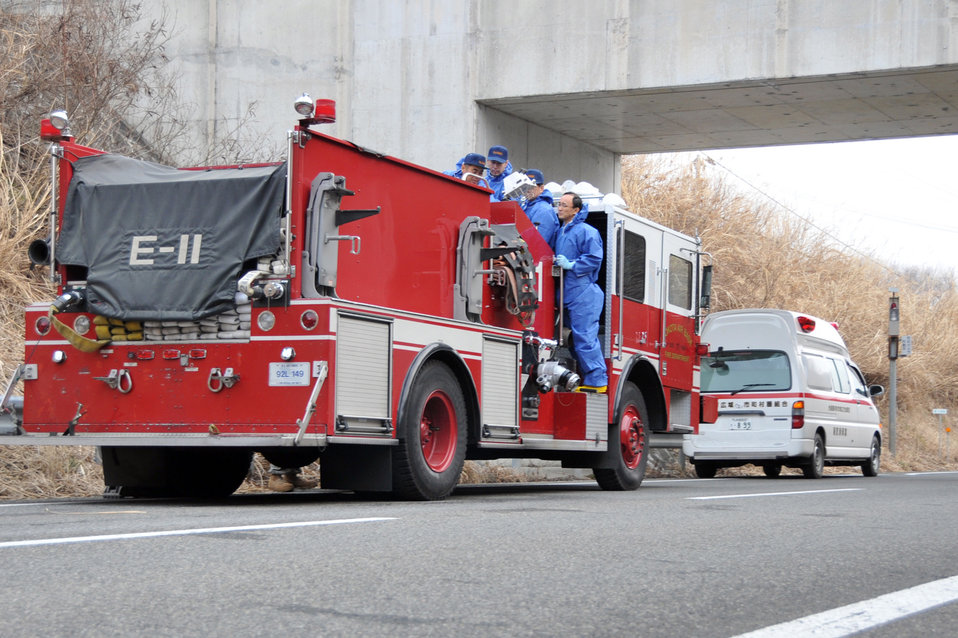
Yokota extends help to firefighters in Fukushima

Japanese firefighters in Fukushima examine the control systems on a fire truck March 15, 2011, delivered to them from Yokota Air Base, Japan. The truck will be used to assist with recovery efforts in northern Japan following the earthquake and tsunami March 11.